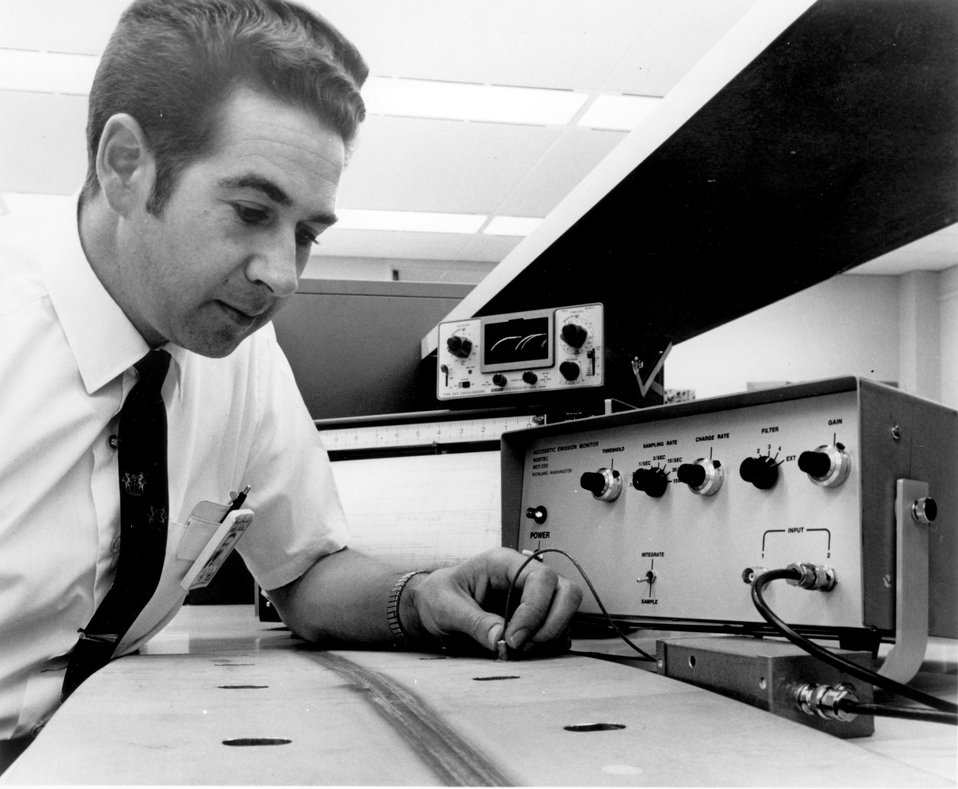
A revolutionary monitoring device, which instantaneously detects flaws in welds, has been developed at Pacific Northwest Laboratory as part of the AEC's nondestructive testing research and development program. c. 1970